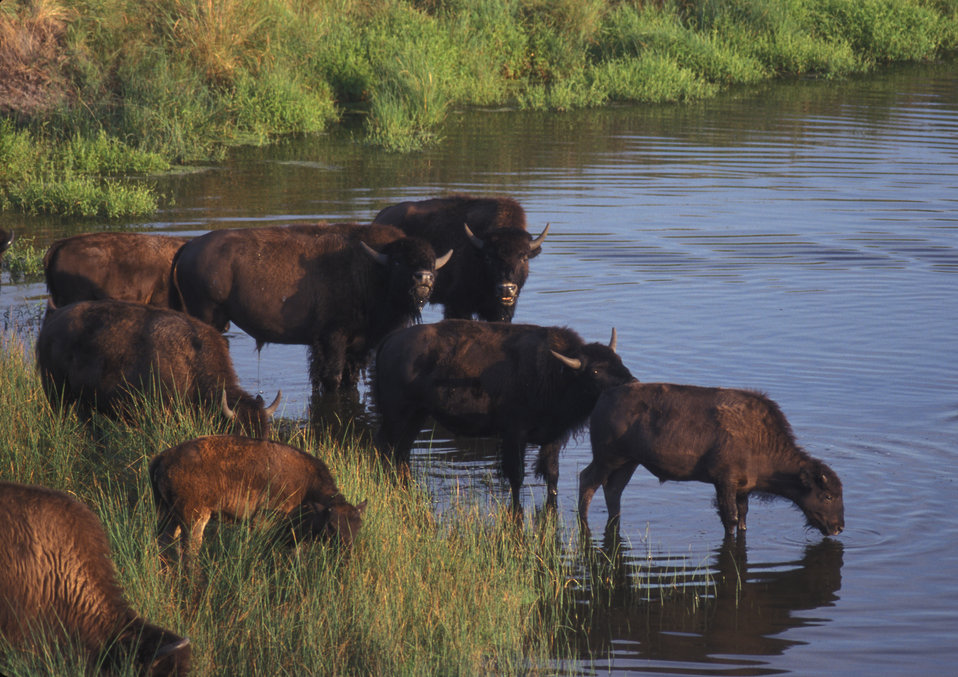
Bison near a river.

A group of buffalo near a river at Fort Niobrara National Wildlife Refuge. Resource links:http://www.fws.gov/fortniobrara/